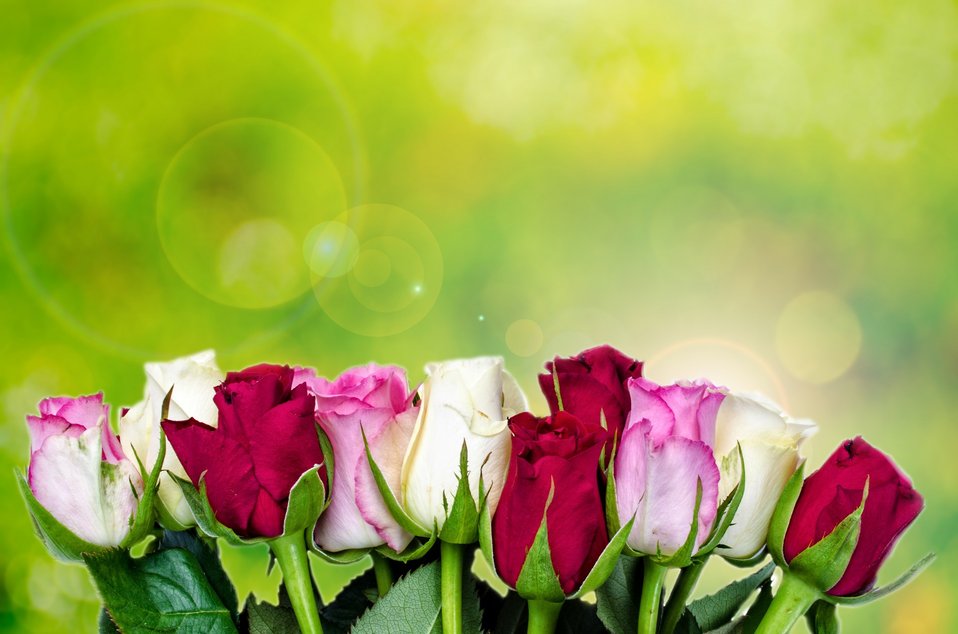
Flowers - rose

Flowers on the green background.